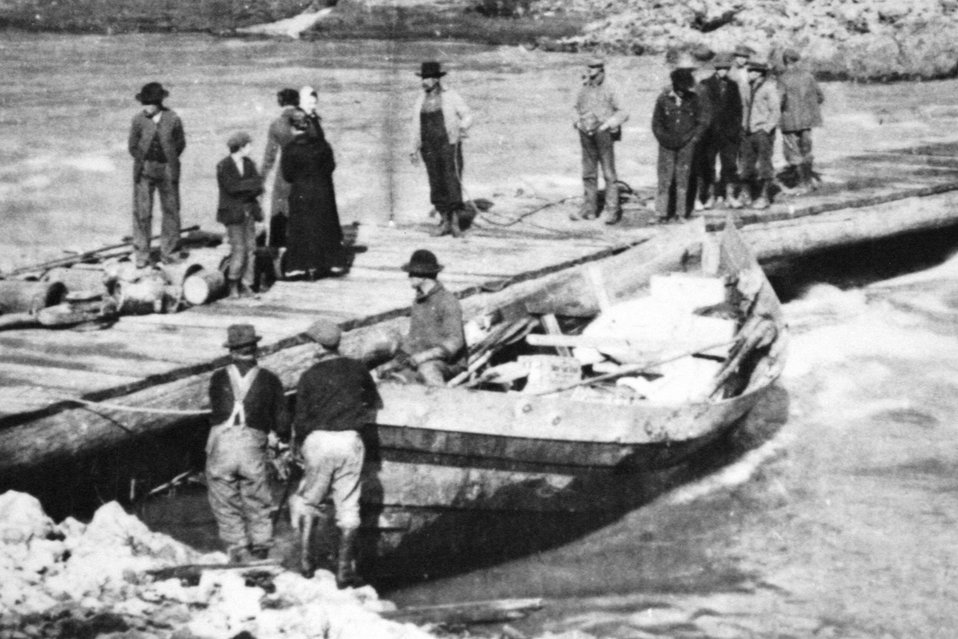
Almeda mine C. 1910 - 1911